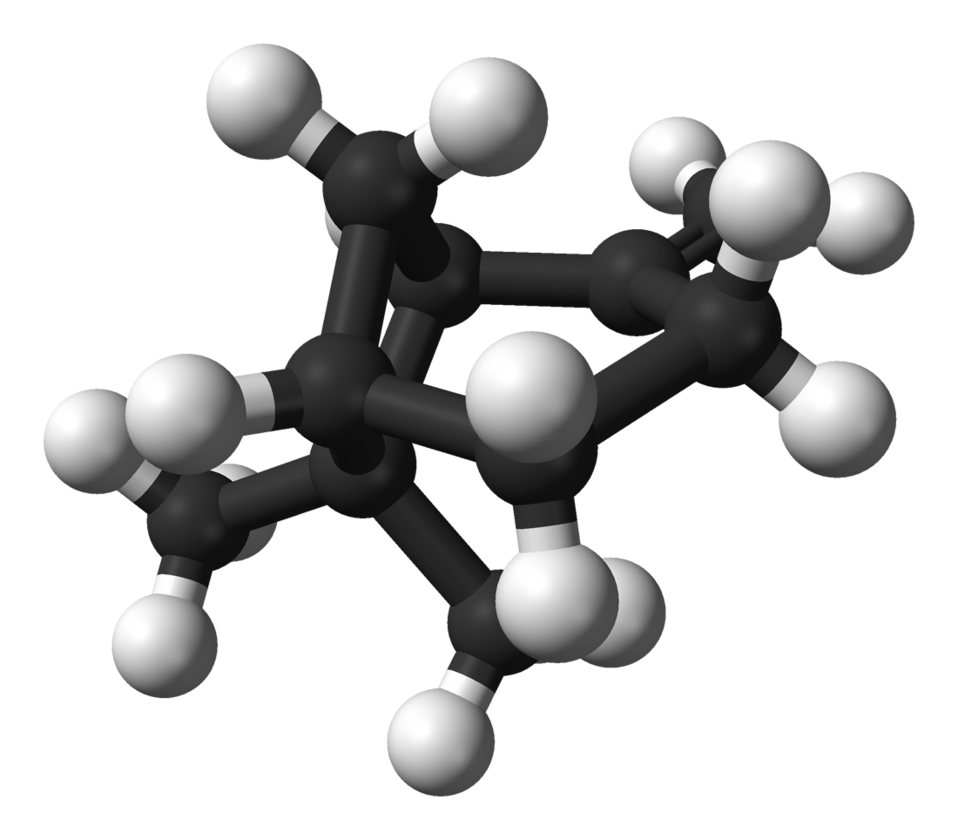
Ball-and-stick model of the ( )-β-pinene molecule